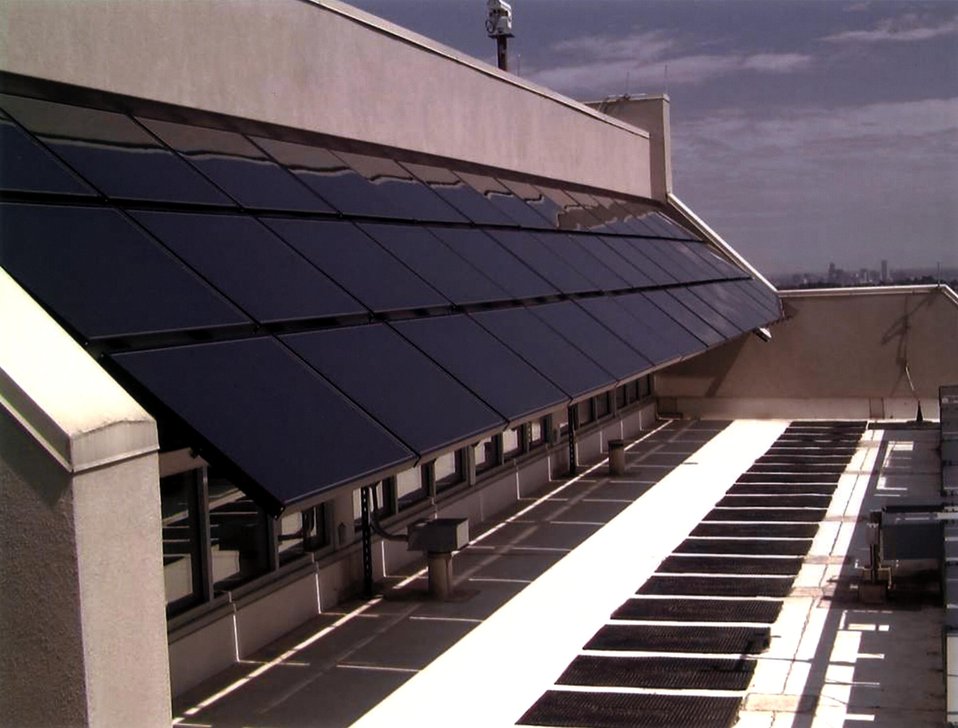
PHOTOVOLTAIC MODULES ON THE NATIONAL RENEWABLE ENERGY LABORATORY.

THIS BUILDING-INTEGRATED ARRAY OF 36 AMORPHOUS-SILICON PV MODULES SHADES THE BUILDING AND PRODUCES ABOUT 2,250 KILOWATT-HOURS OF ELECTRICITY PER YEAR. THE SYSTEM WAS INSTALLED AS PART OF A COOPERATIVE RESEARCH AND DEVELOPMENT AGREEMENT WITH BP SOLAR INC. TO STUDY ITS LONG TERM PERFORMANCE AND RELIABILITY.